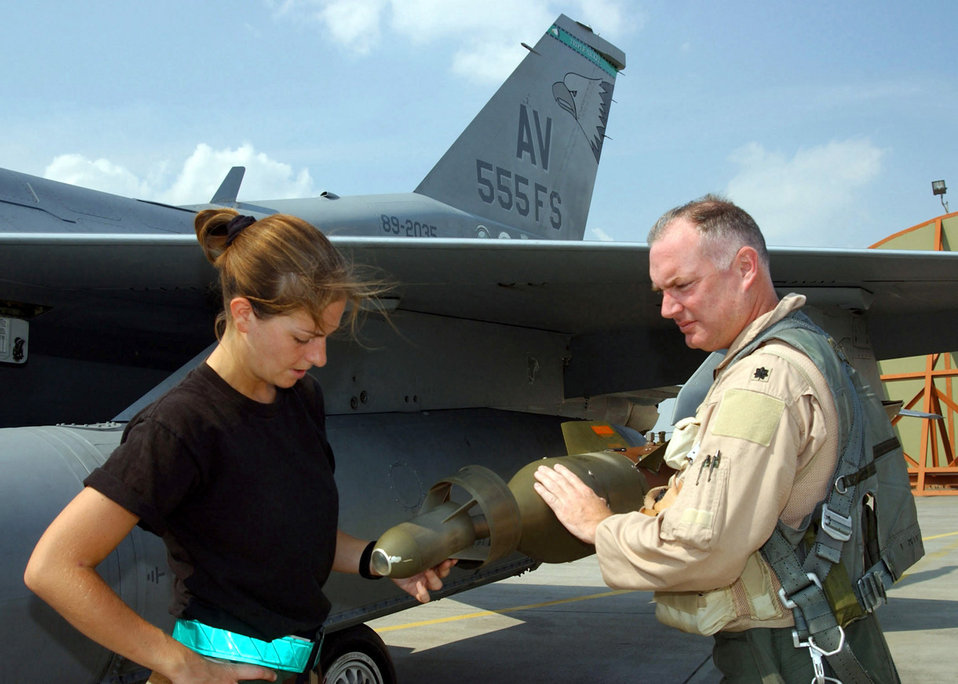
Preflight

OPERATION NORTHERN WATCH -- Lt. Col. Bob Broderick, 555th Fighter Squadron commander and Senior Airman Margarethe Via, a crew chief with the 555th, preflight munitions on an F-16 Fighting Falcon. The 555th, assigned to Aviano Air Base, Italy, deployed to Incirlik Air Base, Turkey as part of Operation Northern Watch.